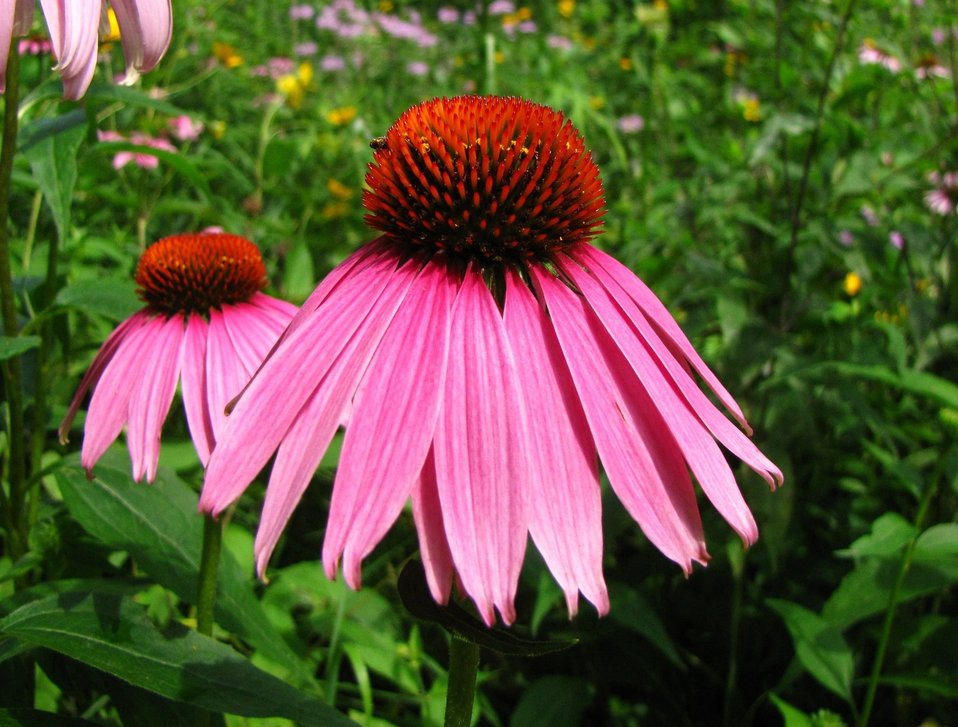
purple coneflower

Port Louisa National Wildlife Refuge, IA